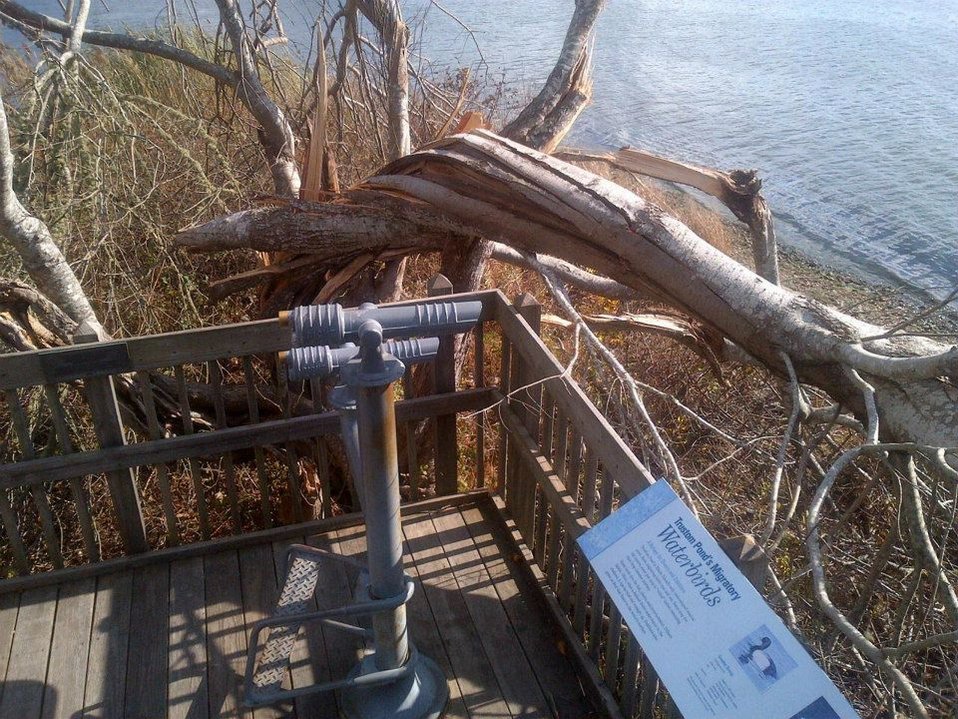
Otter Point Platform at Trustom Pond National Wildlife Refuge (RI)

Tree damaged by Hurricane Sandy at Otter Point Platform at Trustom Pond NWR, Thursday 11/1.